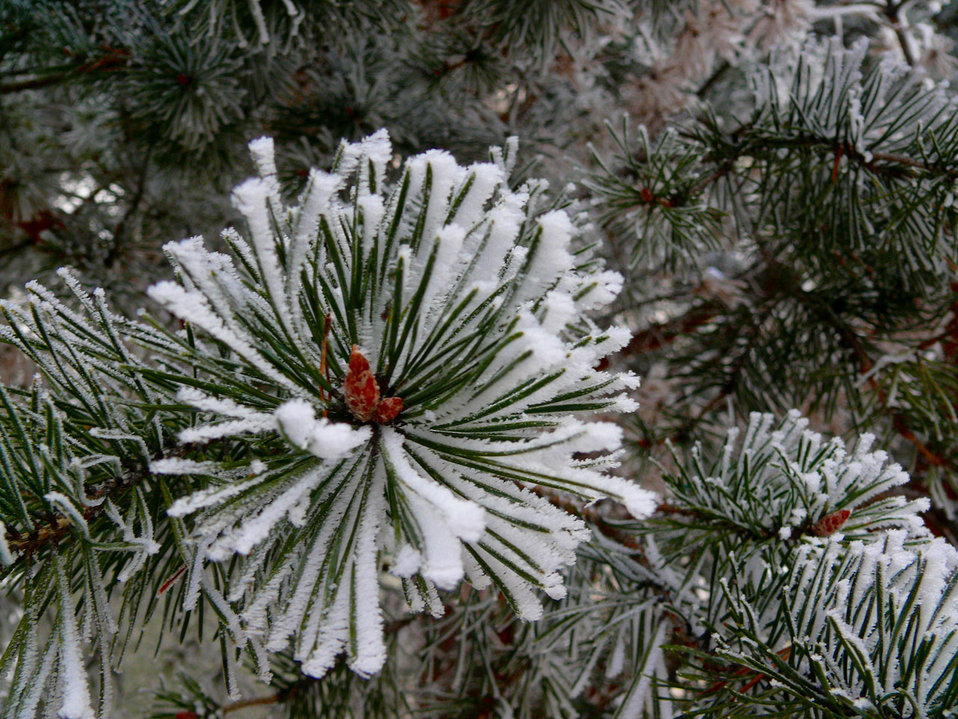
Winter time in slovakia.